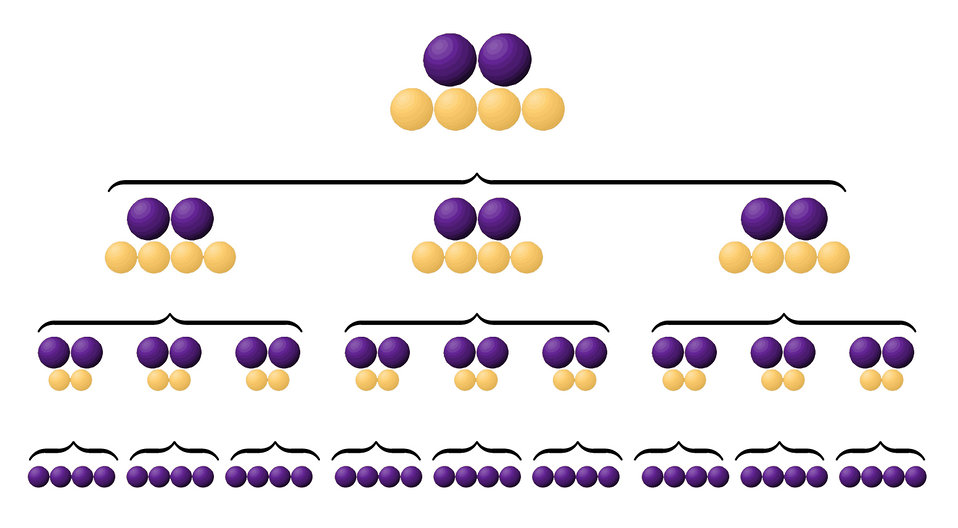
Error Correction Architecture

The new NIST architecture for quantum computing relies on several levels of error checking to ensure the accuracy of quantum bits (qubits). The image above illustrates how qubits are grouped in blocks to form the levels. To implement the architecture with three levels, a series of operations is performed on 36 qubits (bottom row) each one representing either a 1, a 0, or both at once. The operations on the nine sets of qubits produce two reliably accurate qubits (top row). The purple spheres represent qubits that are either used in error detection or in actual computations. The yellow spheres are qubits that are measured to detect or correct errors but are not used in final computations.